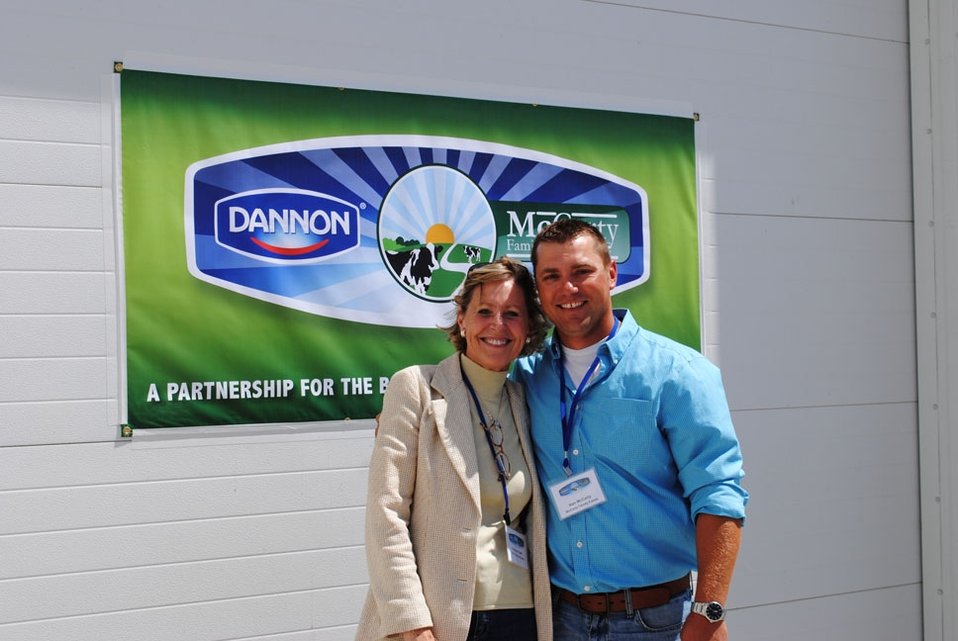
Ken and Patty

U.S. Department of Agriculture (USDA) Rural Development (RD) State Director Patty Clark congratulates Ken McCarty during the McCarty Family Farms grand opening of the dairy and processing plant in Rexford, Kan., on June 13, 2012. Ken McCarty is one of four brothers who have partnered with their parents to operate three dairies in western Kansas.